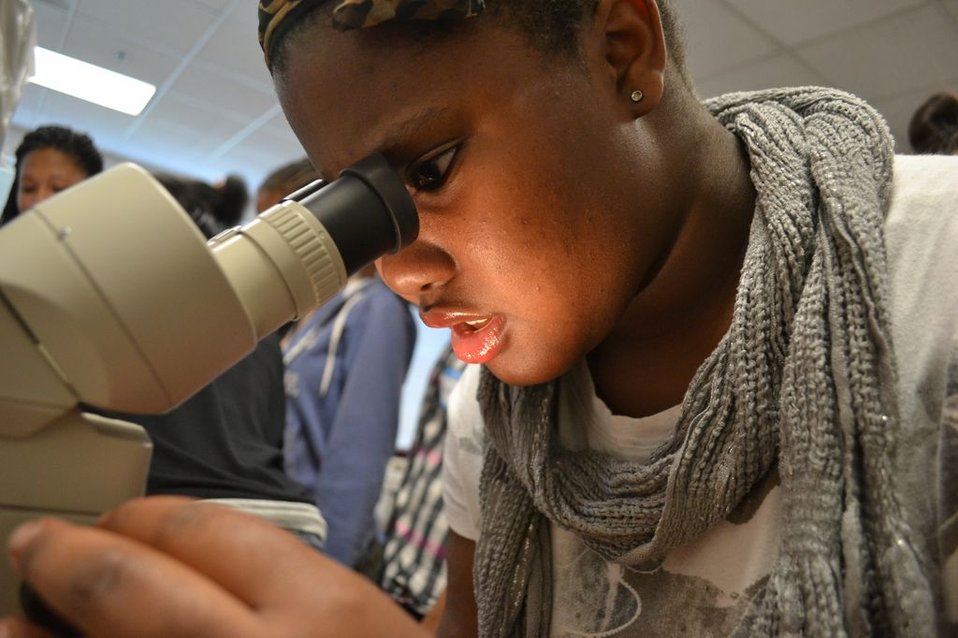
Spelman Girls Institute Nov 2012

At the Spelman Girls Institute, girls participated in workshops like Adventure Time, a forensics workshop that demonstrated the math and problem solving aspects of forensics in a Clue-meets-CSI challege.